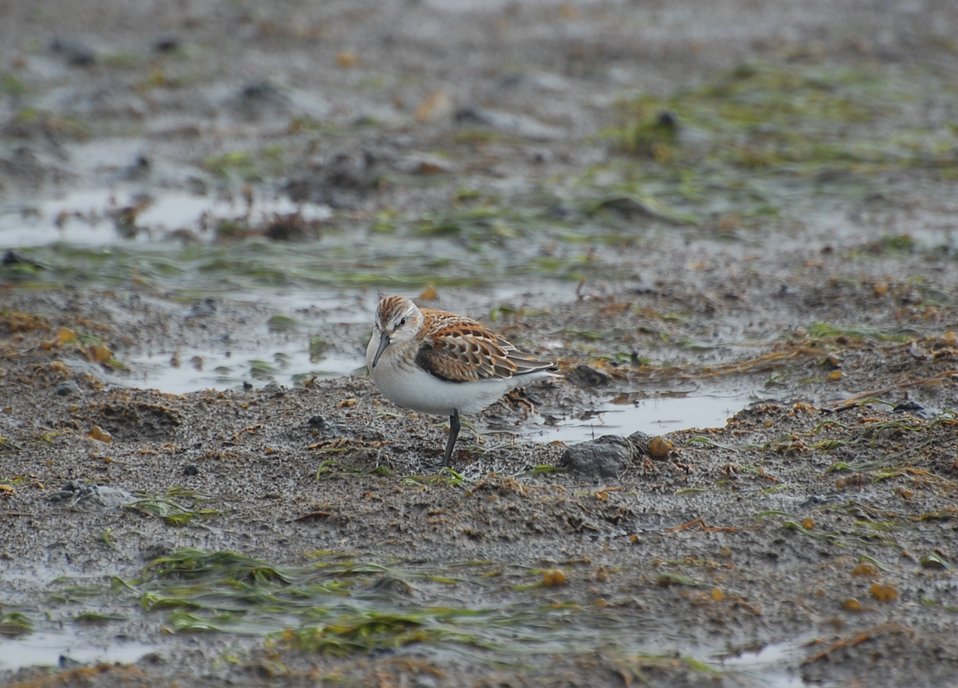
Juvenile Western Sandpiper

Kinzarof Lagoon, Izembek National Wildlife Refuge
Photo by Kristine Sowl,
USFWS, Public Domain